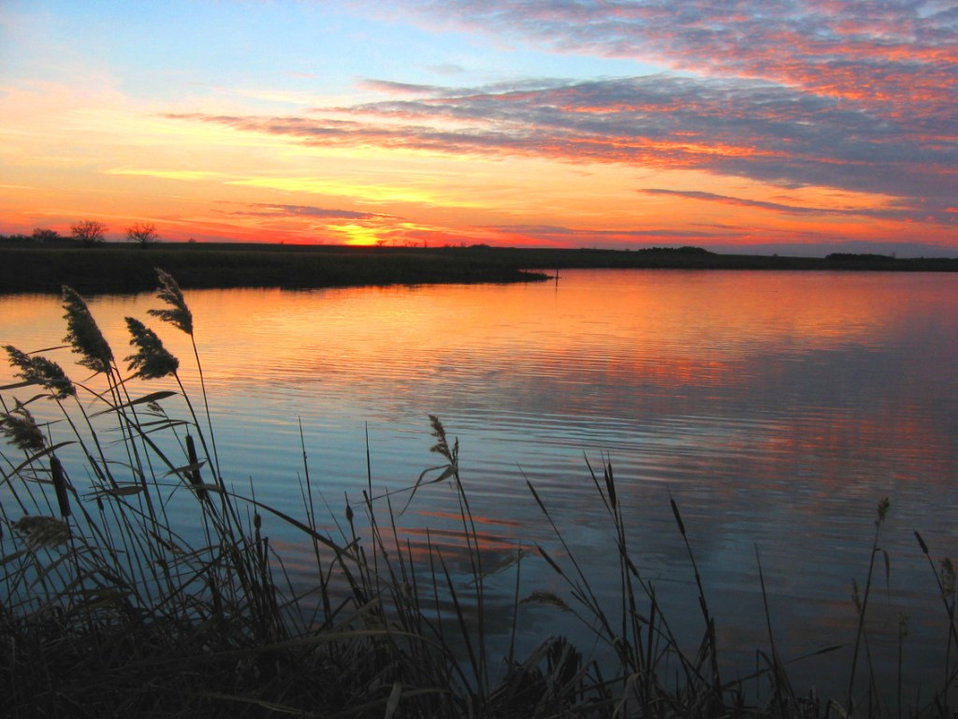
J. Clark Salyer National Wildlife Refuge, ND

November sunset